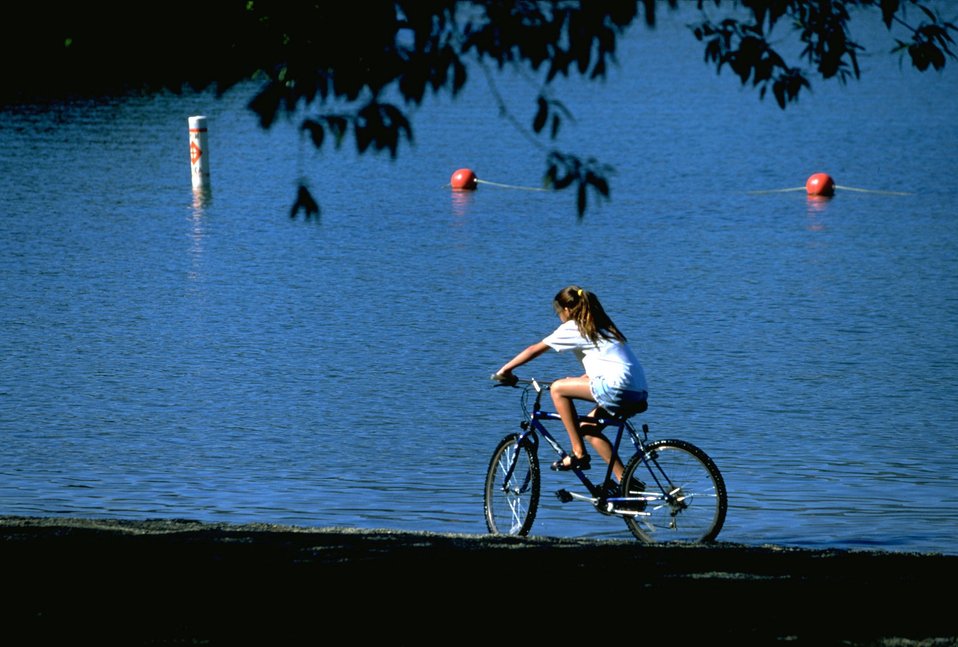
Girl bicycling at the edge of Holter Lake